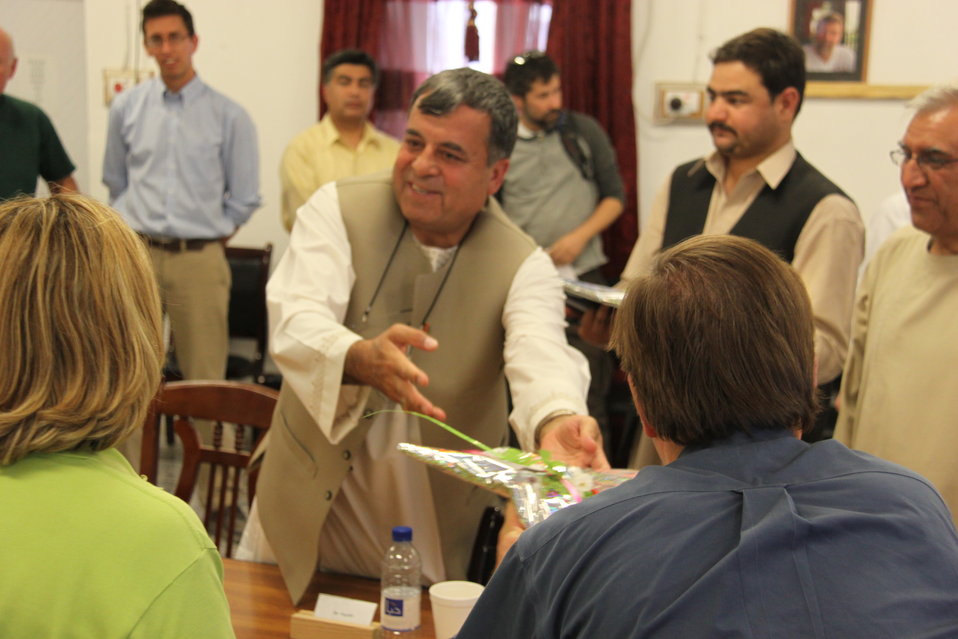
Meeting with Local Leaders in Kandahar